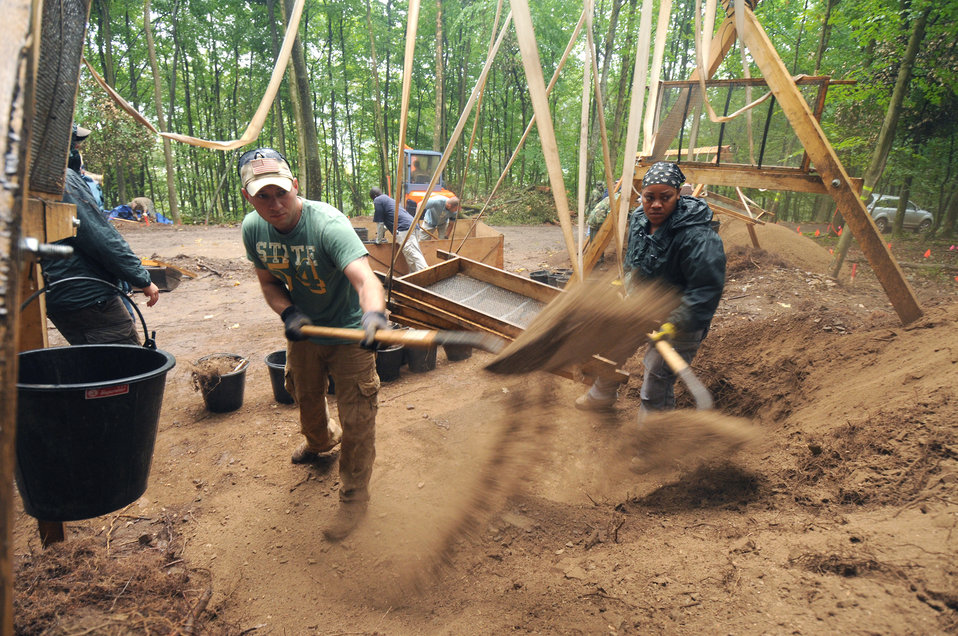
Joint team searches for fallen Airmen in local German forest

Army Staff Sgt. Ryszard Tella (left) and Staff Sgt. Alceve Lawrence shovel dirt from a sifting station during the last day of digging during their mission July 28, 2010, in Rheinland-Pfalz, Germany. The mission of the JPAC is to achieve the fullest possible accounting of all Americans missing as a result of the nation's past conflicts. Sergeants Tella and Lawrence are assigned to the Joint Prisoners of War/Missing in Action Accounting Command.